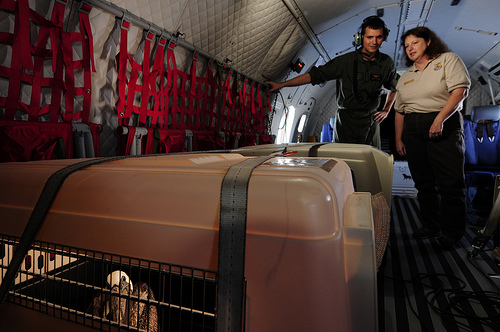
U.S. Fish and Wildlife Recovers Birds

NEW ORLEANS - Coast Guard Petty Officer 3rd Class Andrew Anderson and Dr. Sharon Taylor of the U.S. Fish and Wildlife Service, watch over birds aboard a Coast Guard HC-144A Ocean Sentry aircraft, May 30, 2010. The birds were found oiled near Louisiana's coast, cleaned at Fort Jackson, La. and released near Tampa Bay, Fla. U.S. Coast Guard photo by Petty Officer 2nd Class Luke Pinneo